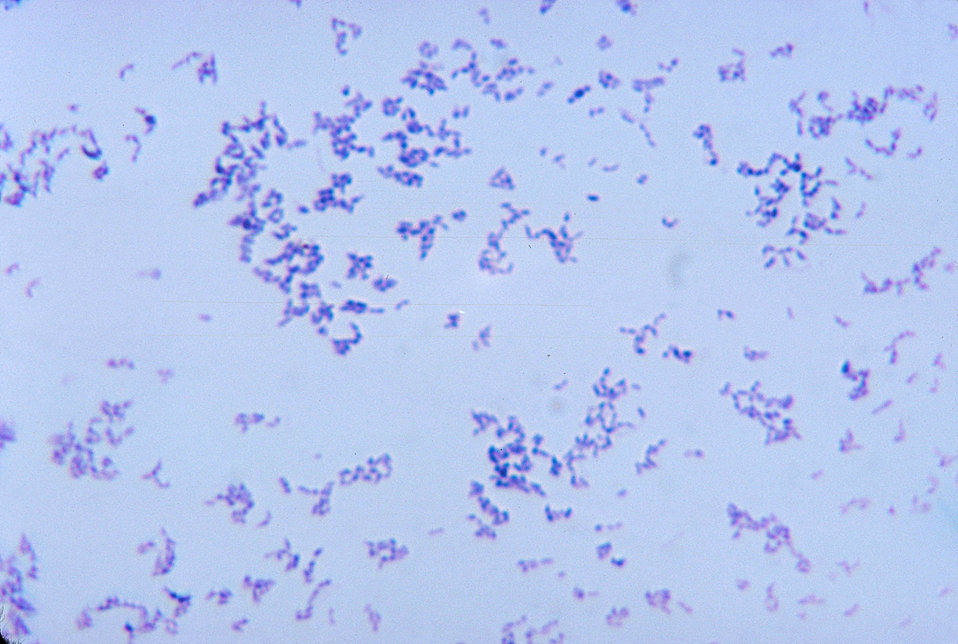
This micrograph depicts the gram-positive bacterium Propionibacterium acnes grown in blood agar for 48 hours.